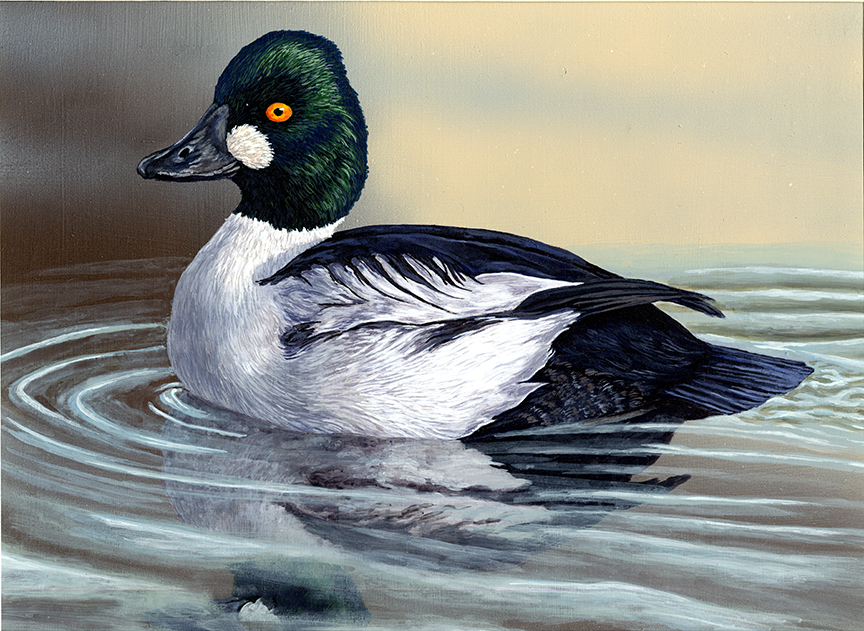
JRDuck2013WI

2013 Junior Duck Stamp Best of Show-Wisconsin